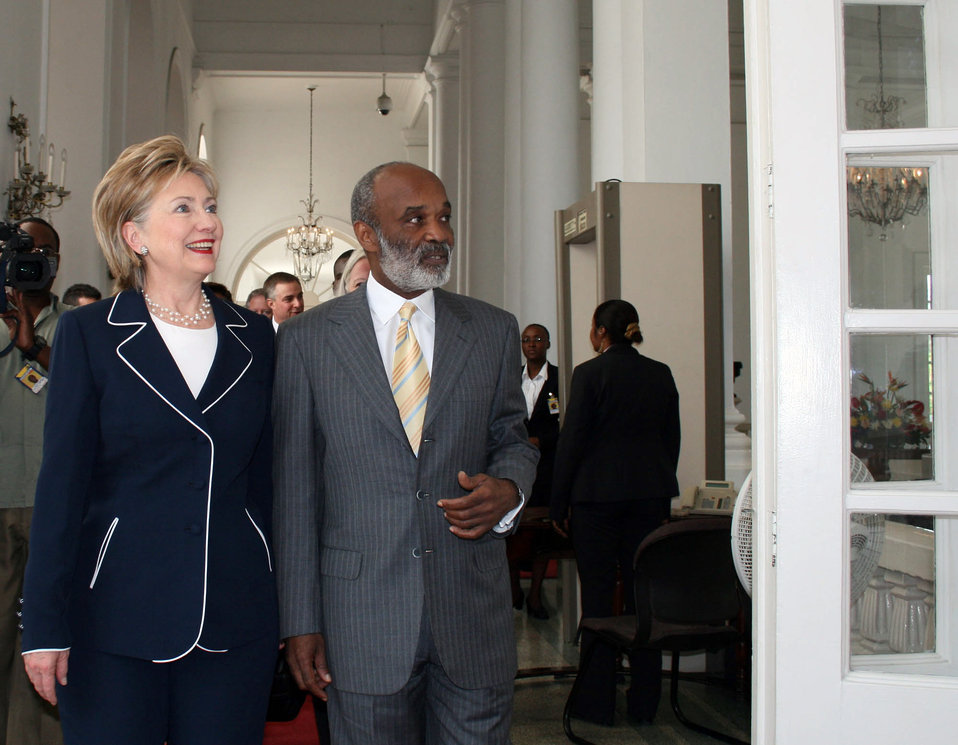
Secretary Clinton and Haitian President Before Press Briefing

U.S. Secretary of State Hillary Rodham Clinton and President of the Republic of Haiti, Rene Preval enter the President’s private office at the National Palace in Port-au-Prince for a meeting before the press conference in Port-au-Prince, Haiti April 16, 2009.